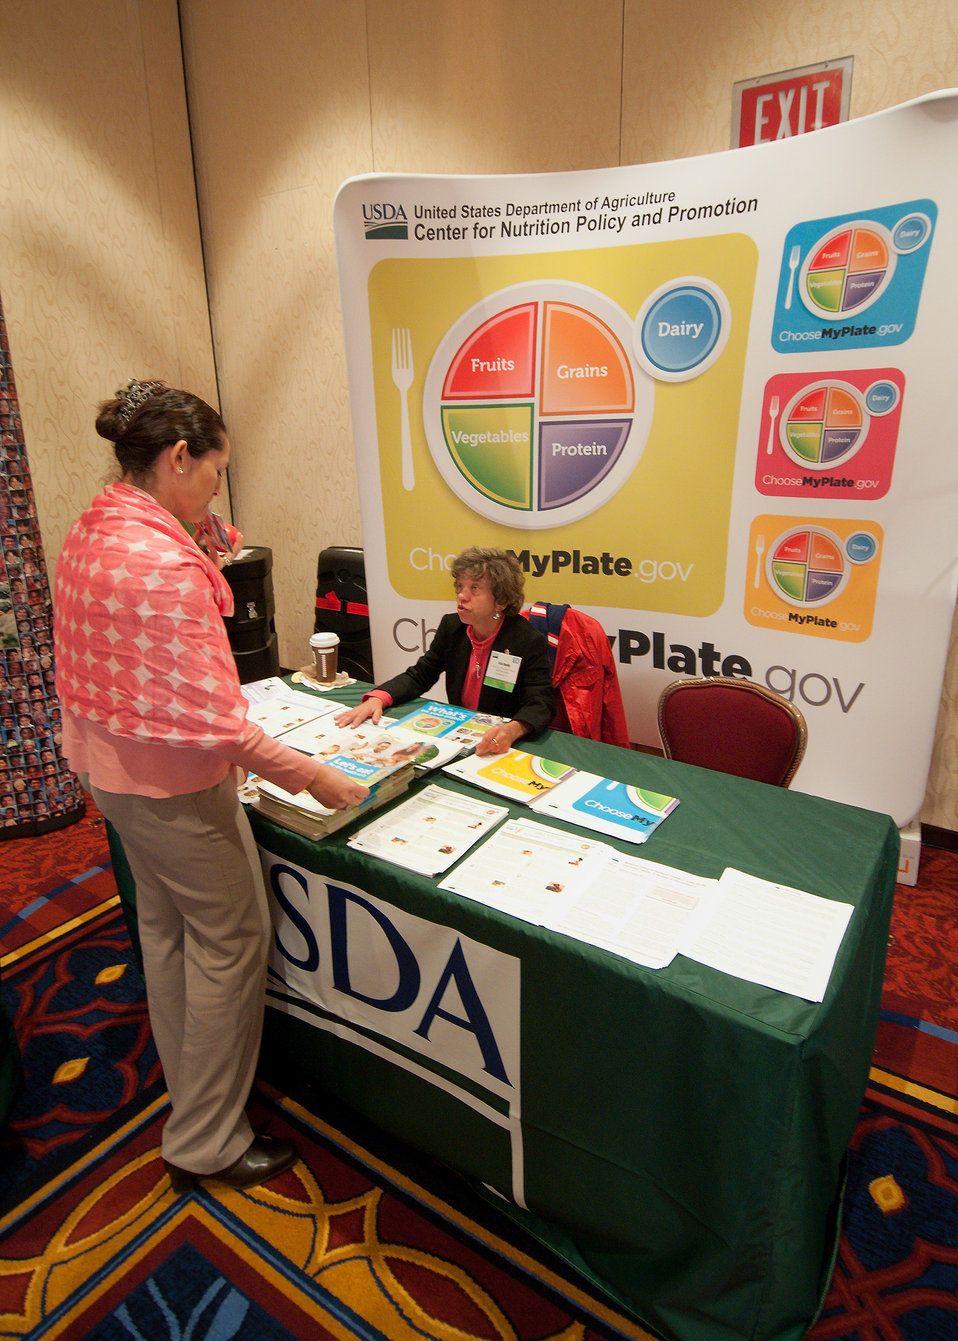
Ana Alvarado (left), Federal Grain Inspection Service asks Lisa Bente (right), Center for Nutrition Policy and Promotion about the United States Department of Agriculture “MyPlate” program in the exhibit hall at the 2012 Agricultural Outlook Forum, “Moving Agriculture Forward, Growing, Innovating and Celebrating 150 Years” held at the Crystal gateway Marriott Hotel Arlington, Virginia, Friday, February 24, 2012. This year's forum coincides with the 150th anniversary of the Department of Agriculture addressing economics, marketing, research, food safety, nutrition, conservation, rural development, alternative energy, trade and many other agricultural issues.